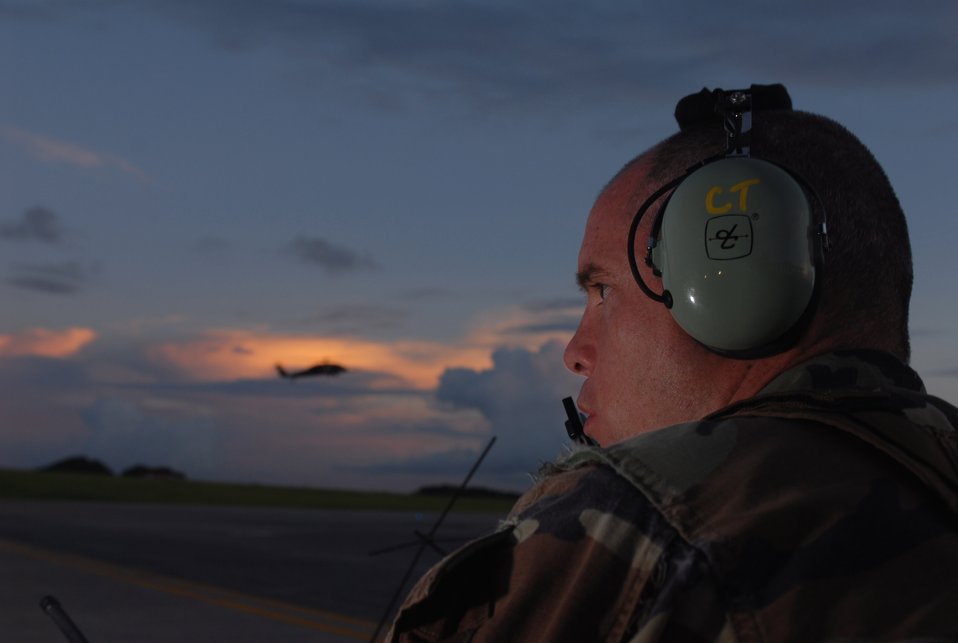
Mass casualty exercise

Capt. Charles Bris-Bois talks to an incoming helicopter crew seen on the horizon during a mass casualty exercise at Kadena Air Base, Japan, Aug. 29. Captain Bris-Bois is a combat rescue officer with the 31st RQS.